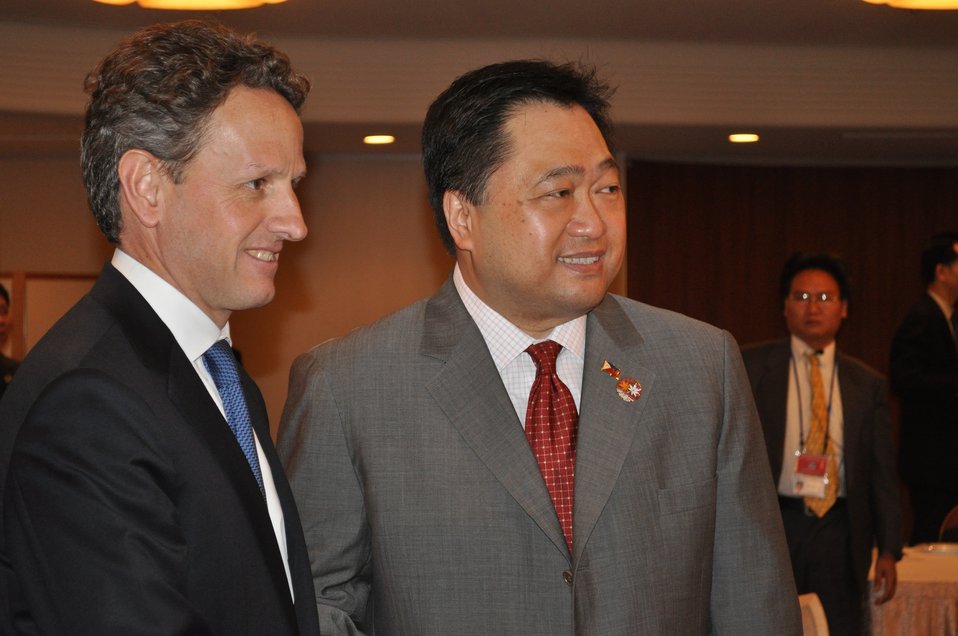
Secretary Geithner's trip to Japan

Secretary Geithner and Philippines Finance Secretary Cesar V. Purisima confer at an informal breakfast with finance ministers of the Association of Southeast Asian Nations (ASEAN), an important regional forum for financial and economic cooperation, in Kyoto, Japan.